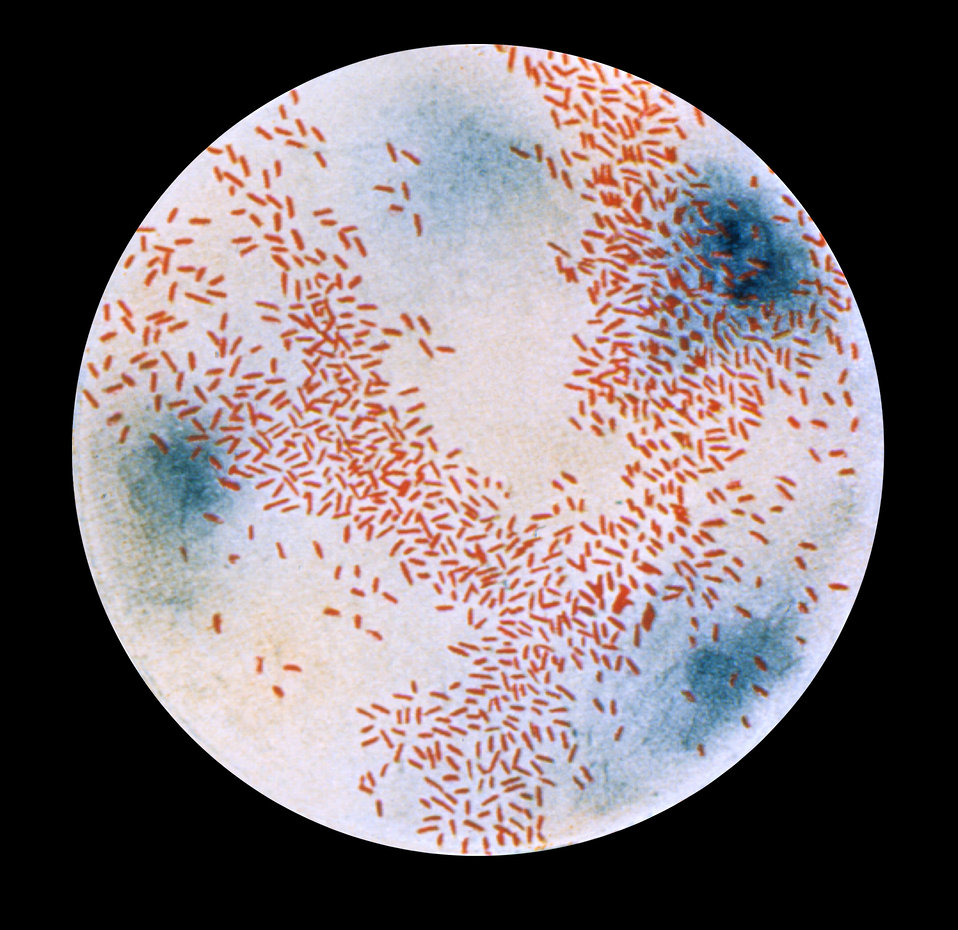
Photomicrograph of Haemophilus influenzae as seen using a Gram-stain technique.